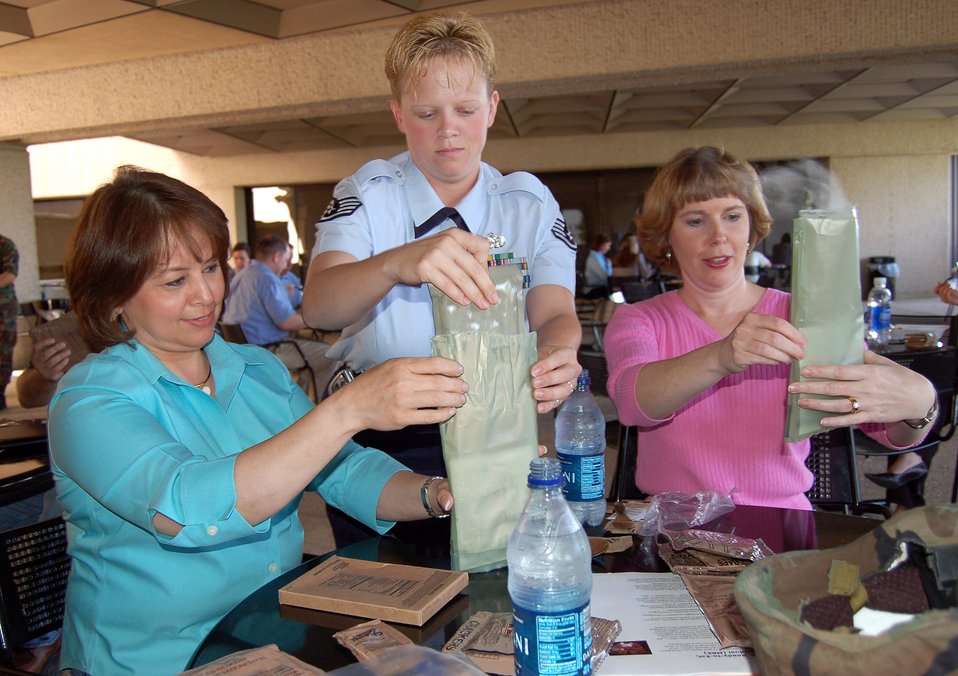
Servicemembers get chance to tell their side of story

Staff Sgt. Paula Newman helps USAA employees Liz Wagner and Mary Jane Norris prepare their Meals, Ready To Eat, at USAA in San Antonio Sept. 26. As part of the Department of Defense's